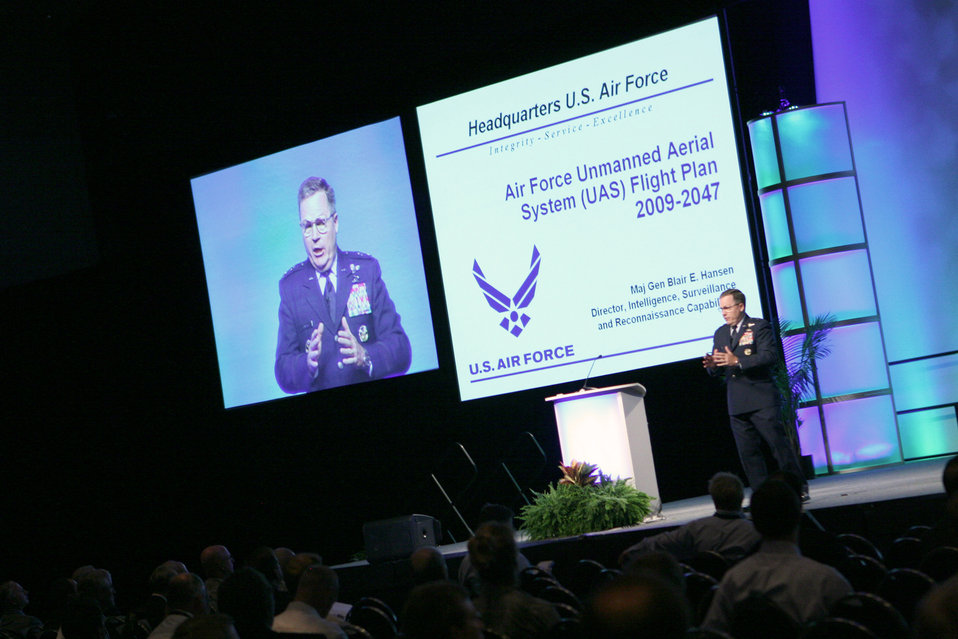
Convention showcases unmanned capabilities

Maj. Gen. Blair E. Hansen addresses an audience of unmanned systems developers and industry professionals during the Association for Unmanned Vehicle Systems International Unmanned Systems North America 2009 Convention Aug. 11 at the Washington, D.C., Convention Center. General Hansen is the Air Force deputy chief of staff for intelligence, surveillance and reconnaissance.